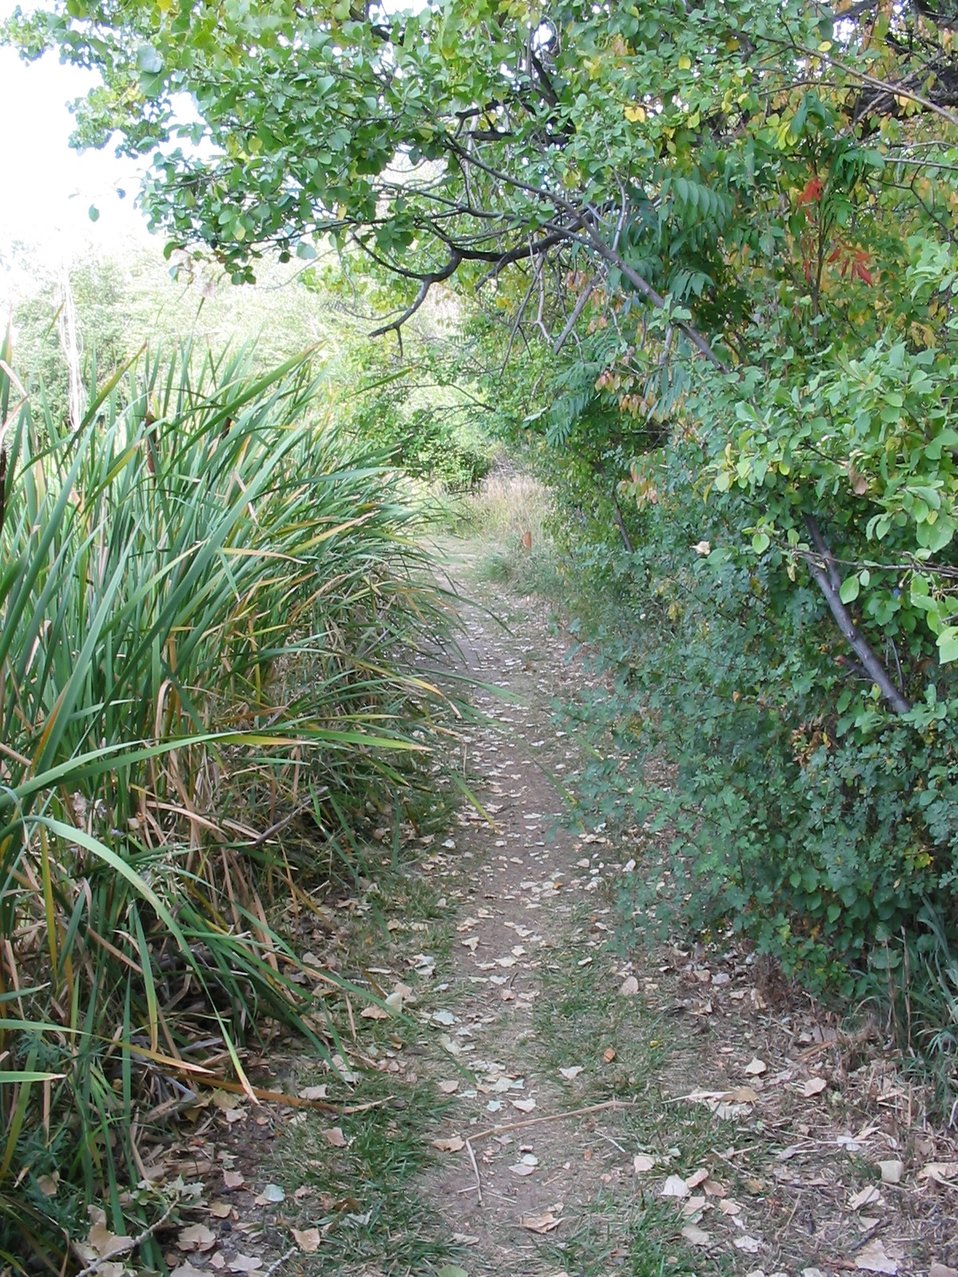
Secret Trail